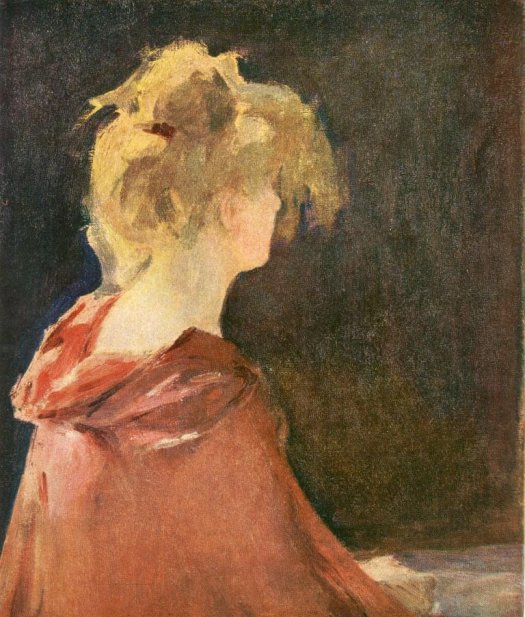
Tea rose Polski: Róża herbaciana